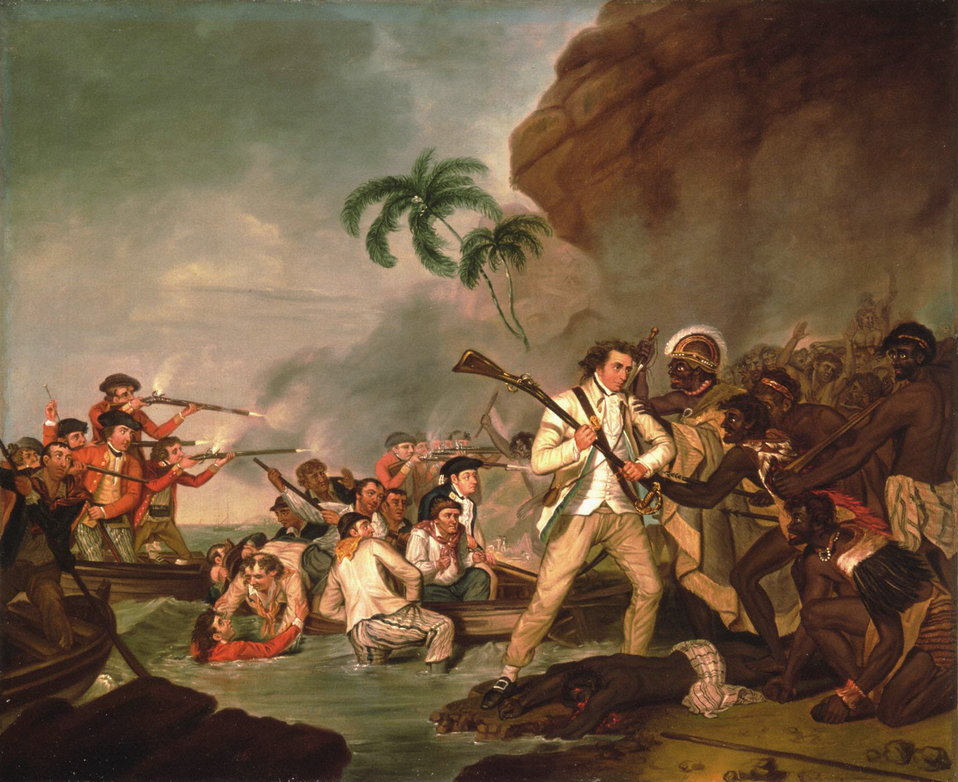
Death of Captain James Cook, oil on canvas by George Carter, 1783, Bernice P. Bishop Museum